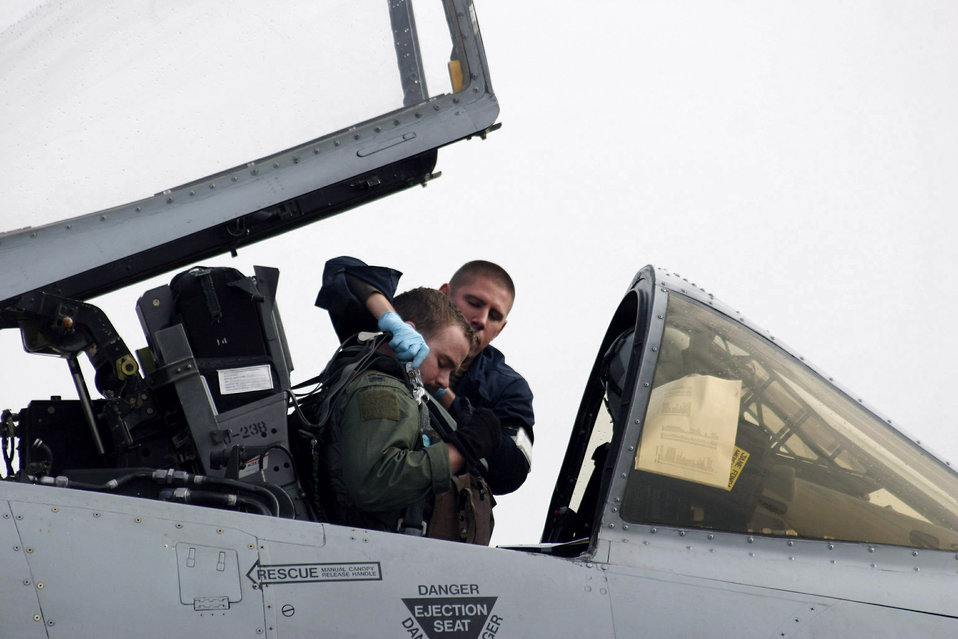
Exercise offers A-10 crews chance to hone warfighting skills

An A-10 Thunderbolt II pilot prepares for a close-air-support mission with the assistance of a ground crewmember during Green Flag East 09-04 Feb. 23 at Barksdale Air Force Base, La.